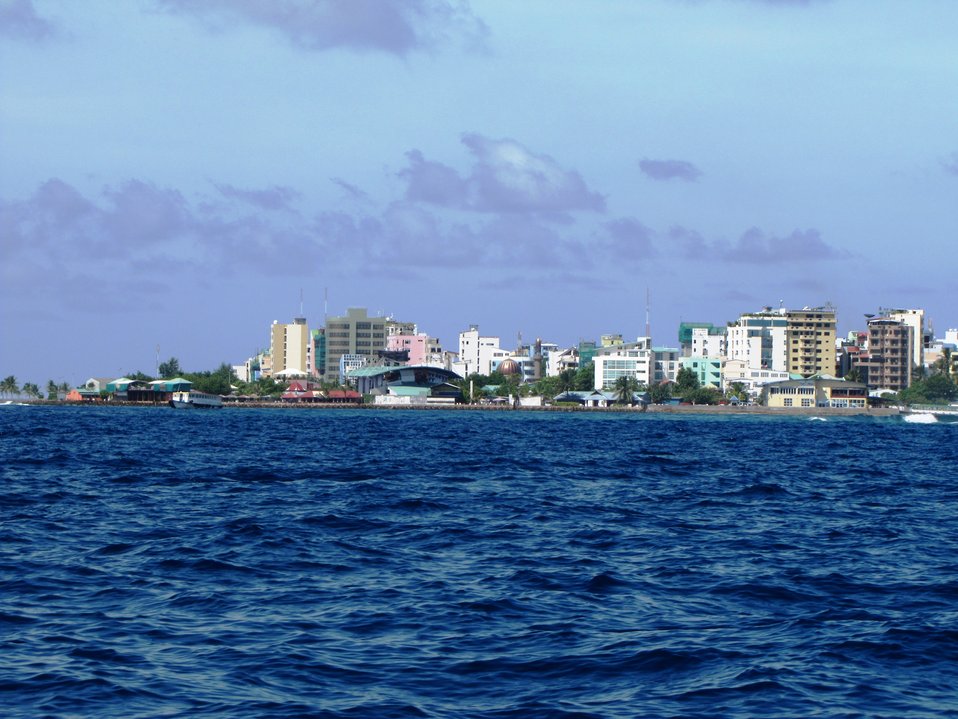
A photo is taken of Male, Maldives, on July 22, 2010.